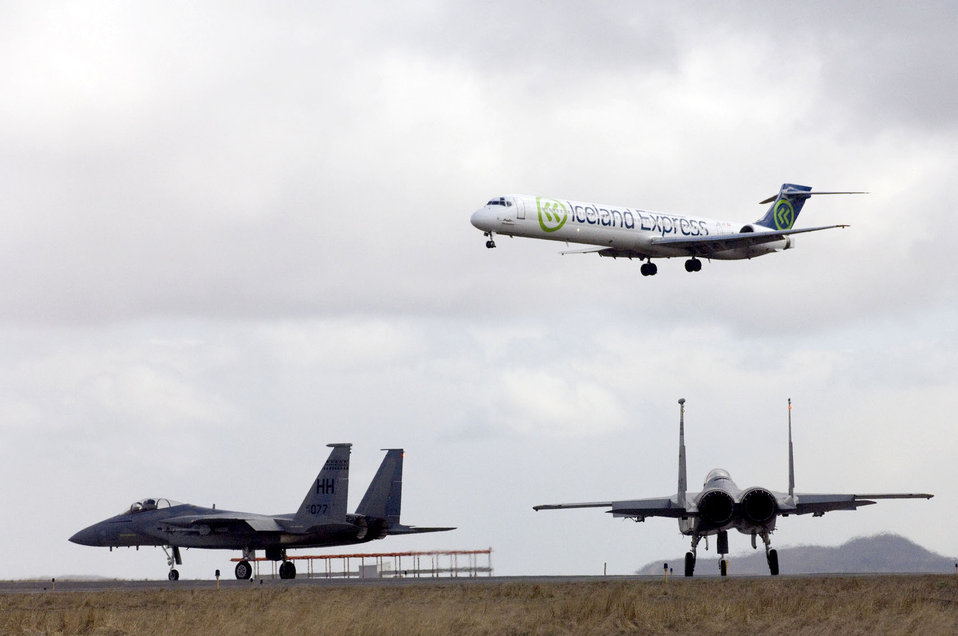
Drawdown at Keflavik

Travelers flying into Iceland may be less likely to see F-15 Eagles in the future as Airmen and Sailors reduce operations at Naval Air Station Keflavik, Iceland, after more than 50 years of U.S. presence at the base. The F-15s and crews are from the Hawaii Air National Guard's 154th Fighter Wing at Hickam Air Force Base.